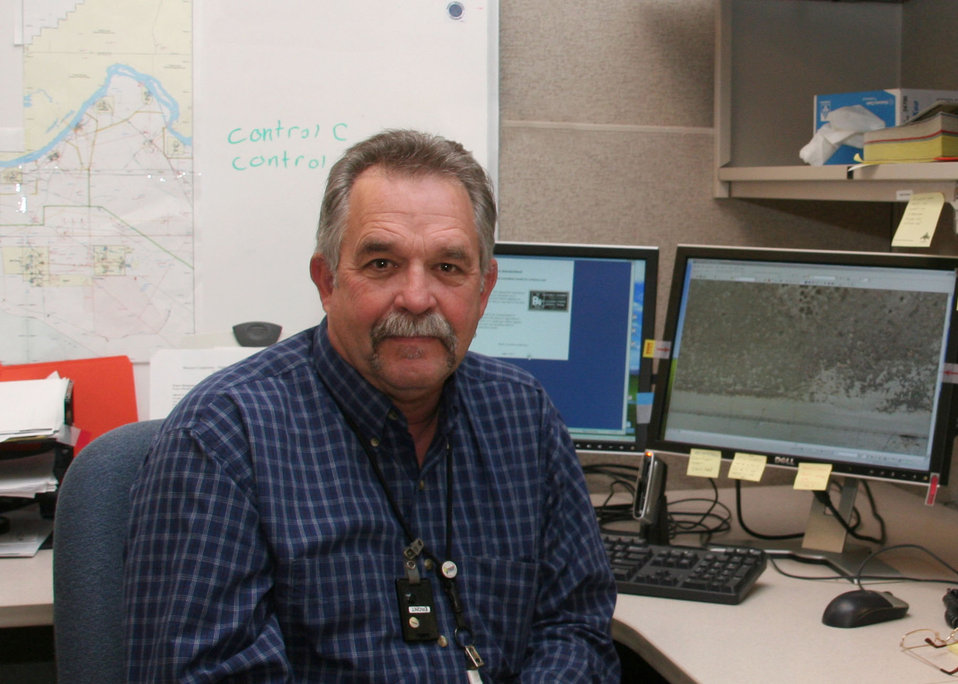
Bob Fahlberg, a field investigator at Hanford, conducts systematic foot-based land surveys (walkdowns) to identify potential waste sites in the River Corridor. Under the ARRA work scope, Fahlberg recently led a walkdown of six waste sites at IU2/IU6 Segment 1 to collect site-specific information, such as the waste site dimensions. Results will help determine if a potential site needs to be cleaned up. If so, it will be added to the list for remediation.